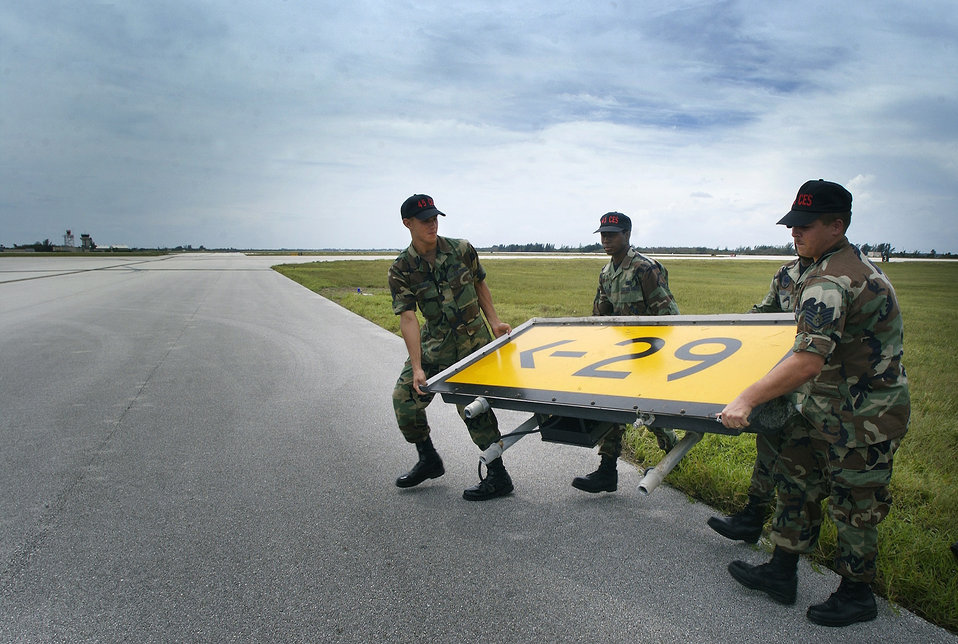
Hurricane Frances

PATRICK AIR FORCE BASE, Fla. -- Members of the 45th Hurricane Recovery Team secure debris scattered on the base's runway in an effort to establish flight operations Sept. 6 after Hurricane Frances hit the base and the surrounding community.